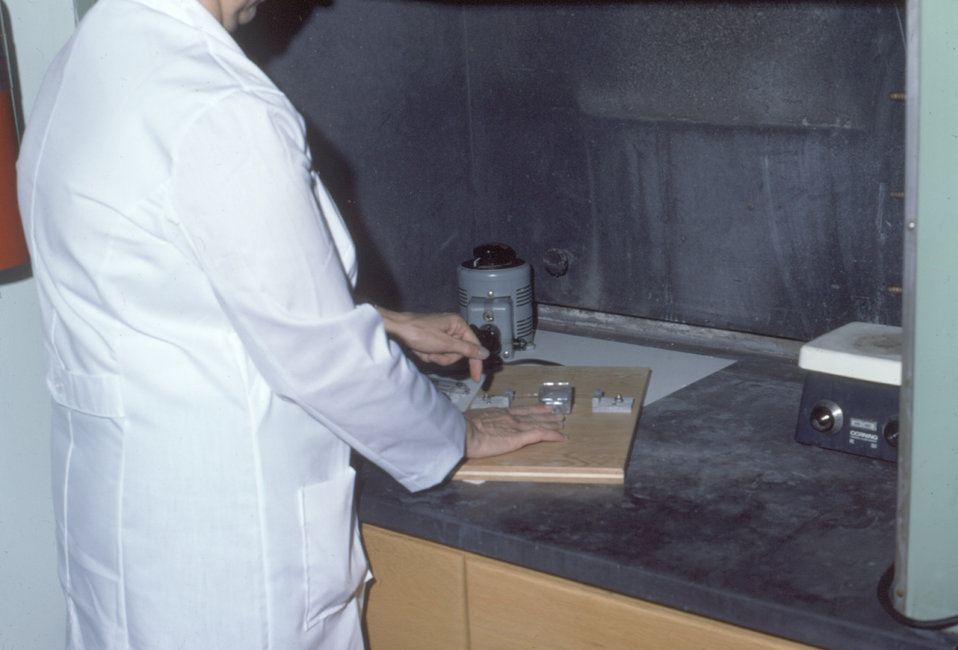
This laboratorian is demonstrating the removal of a Falcon� Flask top with a 'hot' wire during an amniotic fluid test.